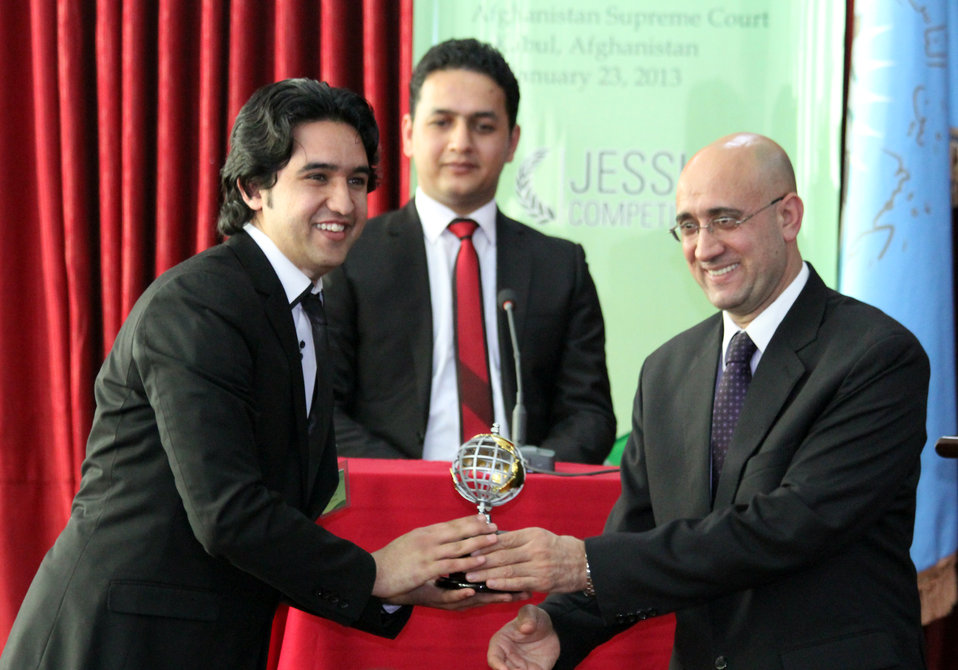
Afghanistan Final National Round of the 2013 Philip C.Jessup International Law Moot Court Competition